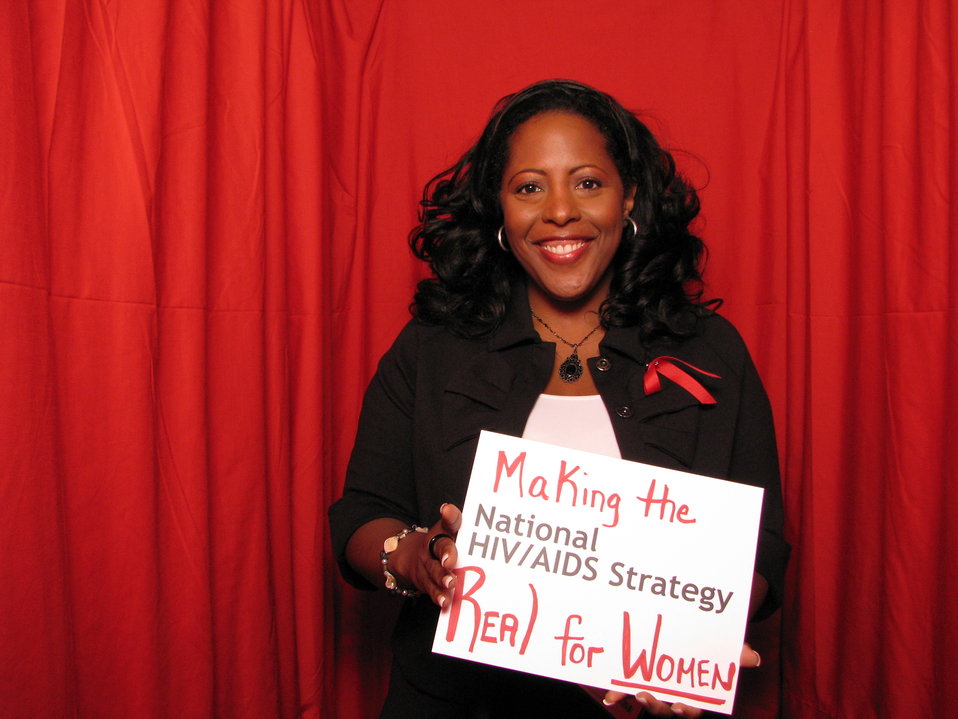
Making the National HIV/AIDS Strategy Real for Women

From the AIDS.gov photo booth at the U.S. Conference on AIDS, September 2010 (Orlando, FL).